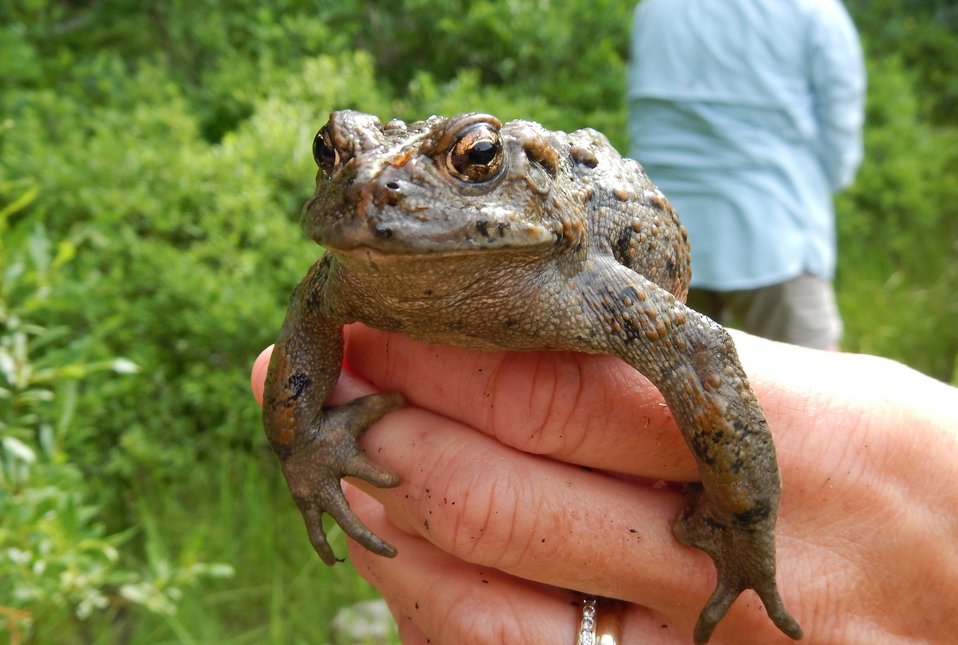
Youth Forest Monit. Photo 2

Laura Burns, a geographic information systems specialist with the Helena and Lewis & Clark National Forests, holds a western toad during an amphibian monitoring study at Heart Lake.